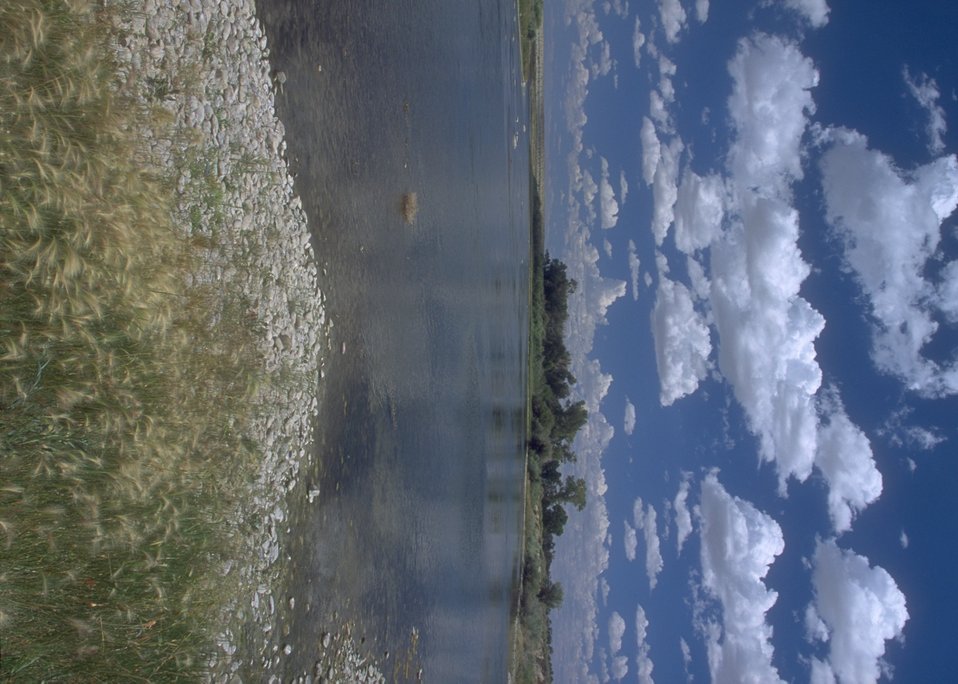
Lombard Ferry Crossing site along the Oregon & Mormon Trail on the Green River, Rock Springs Field Office.